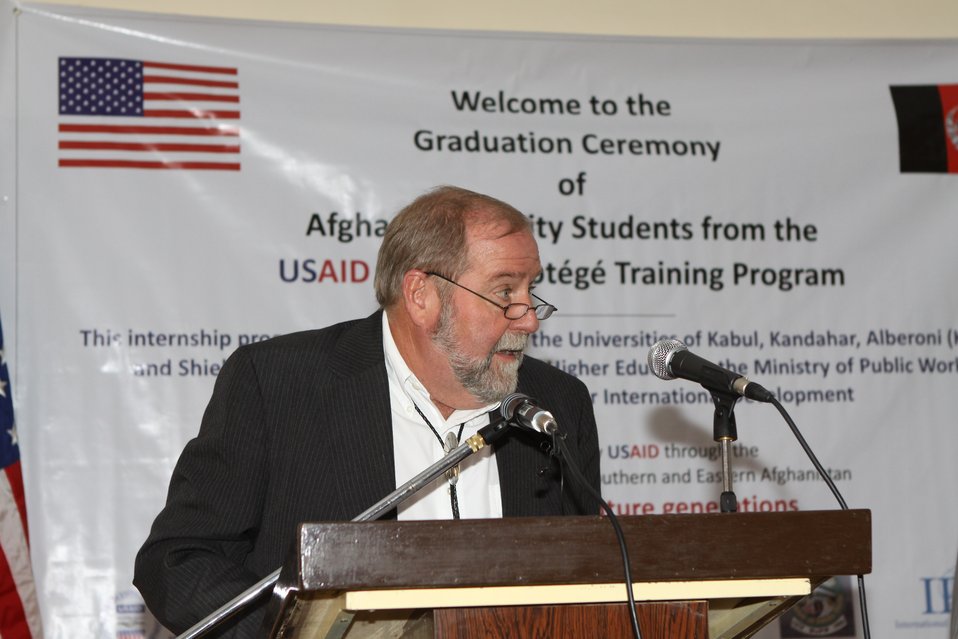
Female University Students Complete Internship

Kabul, Afghanistan | March 16, 2011 – In response to a demand for qualified Afghan engineers, Kabul University celebrated completion of an intensive five-month Mentor Protégé Training Program today by 10 female fourth year university students. The Training Program is a joint effort between the Government of the Islamic Republic of Afghanistan, the U.S. Agency for International Development (USAID), and the Universities of Kabul, Kandahar, Alberoony in Kapisa, Shiekh Zayed in Khost. The graduation ceremony highlighted collaboration with these national institutions in building the technical skills of young Afghans, made possible by USAID.

Four of the interns are engineers, while the remaining six are from the faculties of computer science, economics, and psychology.

Speaking about the event, H.E. Minister of Public Works Abdul Qudus Hamidi said, “The future of Afghanistan lies in developing the skills of our youth, and the engineering skills of these graduates today represent a small but important step forward for the country.”

Keynote speakers at the ceremony included H.E. Deputy Minister of Higher Education Abdul Rahim; USAID Senior Deputy Mission Director Robert Hellyer; and Chancellor of Kabul University Professor Hamidullah Amin. Approximately 150 people, including current and former students attended the graduation.

Launched last year, the Mentor Protégé Training Program has provided qualifying students the opportunity to intern with USAID’s Strategic Provincial Roads-South and East Afghanistan project and gain practical experience in a real work environment. The goal of the program was to offer interns the opportunity to gain hands-on experience to reinforce their formal studies. A total of 30 students from four national universities have benefitted from this program.

“The promotion of women’s rights is integrated into the overall U.S. Government development strategy and can be found in key programs, including education, healthcare, security, rule of law, political participation, agriculture, and economic development,” said Robert Hellyer. “The U.S. Government is committed to the Afghan leadership of programs that directly enhance development, particularly as it relates to women’s issues.”

This event also highlighted the learning achievements of students and emphasized the importance of hands-on internship programs. The curriculum is designed to instill students with the knowledge and confidence to qualify for engineering positions upon completion of their fourth year at their respective universities.